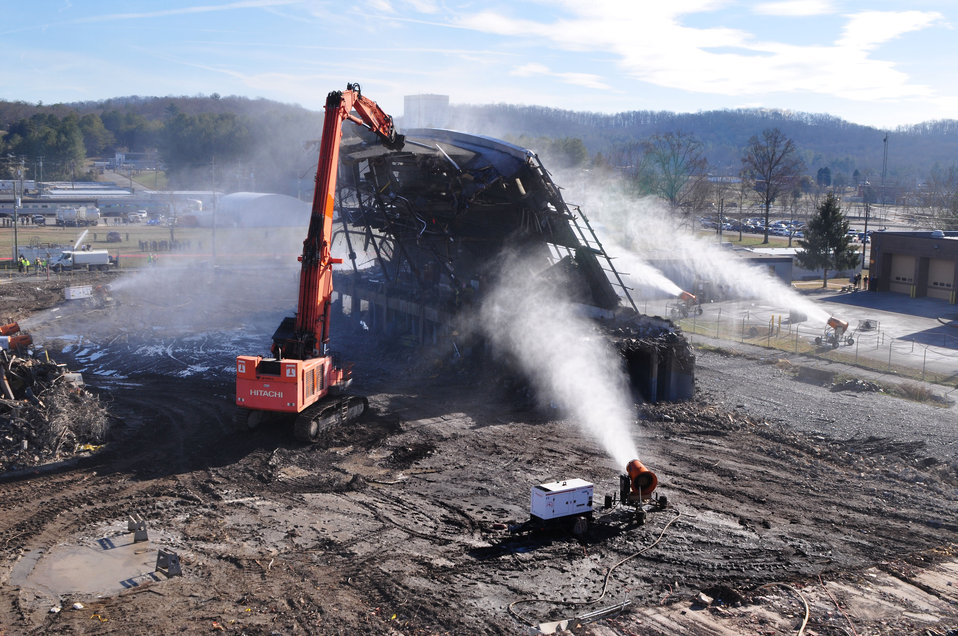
Last Part of K-25 Coming Down Oak Ridge 2013

13-157-1 DOE photo Lynn Freeny 12-19-2013 Oak Ridge Tennessee